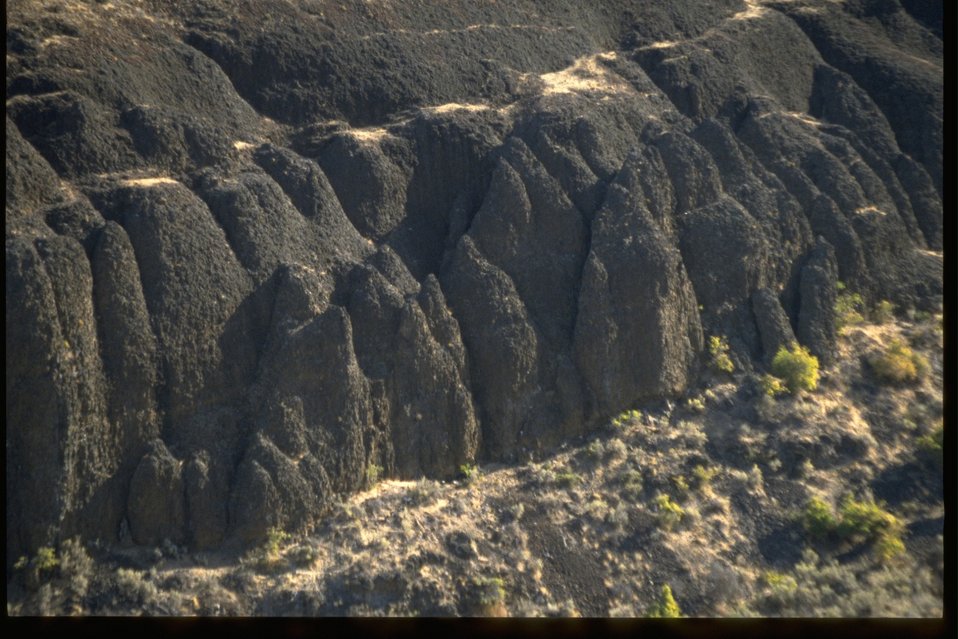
Lava cliffs near the John Day River.